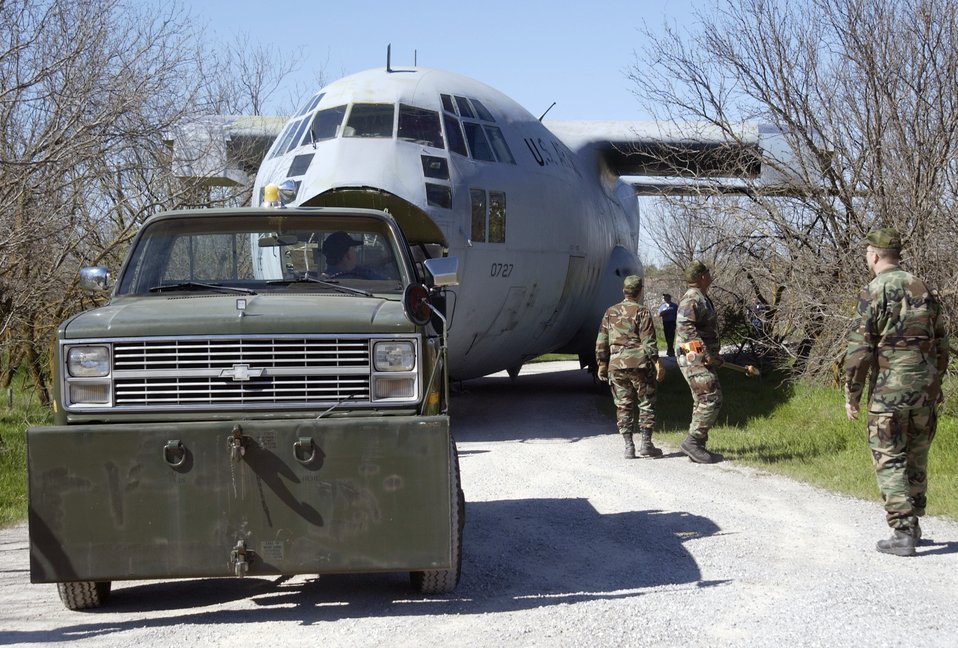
Medical readiness instructors receive new C-130 trainer

SHEPPARD AIR FORCE BASE, Texas -- Winding roads and low-hanging limbs were a few of the obstacles crews overcame April 2 when they towed a C-130 Hercules to the 381st Training Squadron's medical readiness training site. The aircraft became the newest piece of training equipment for medics scheduled to deploy an aeromedical evacuation assignment.